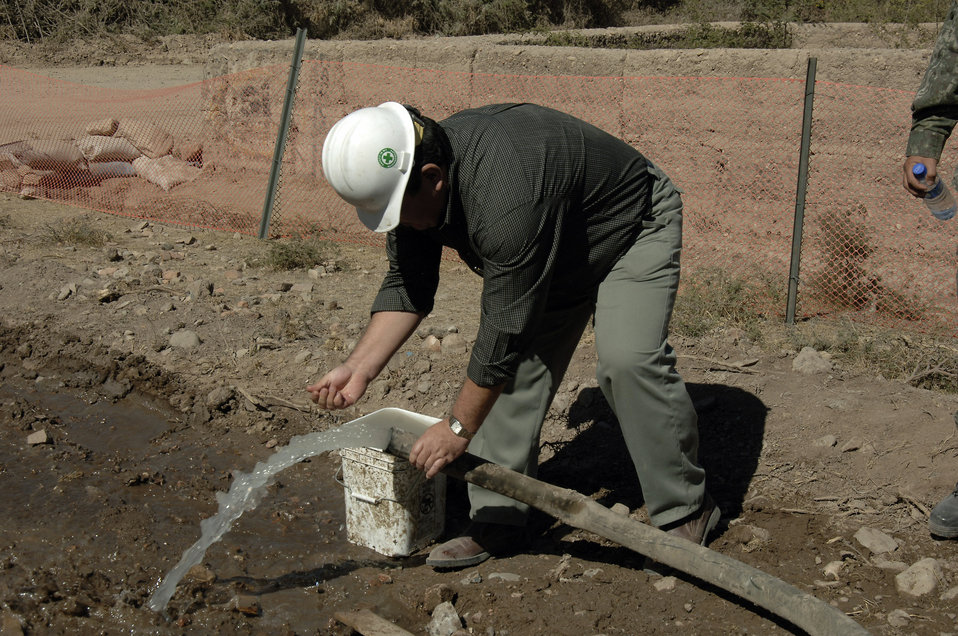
Peru's chief of staff sees 'New Horizon'

Dr. Luis Cabena, the chief of staff to the Minister of Defense of Peru, takes a closer look July 13 at the drilling site in Luricocha, Peru. The Navy Seabees, deployed from Gulfport, Miss., are drilling two wells in support of New Horizons-Peru 2008, a partnered humanitarian effort by the U.S. and Peru to bring relief to underprivileged Peruvians.